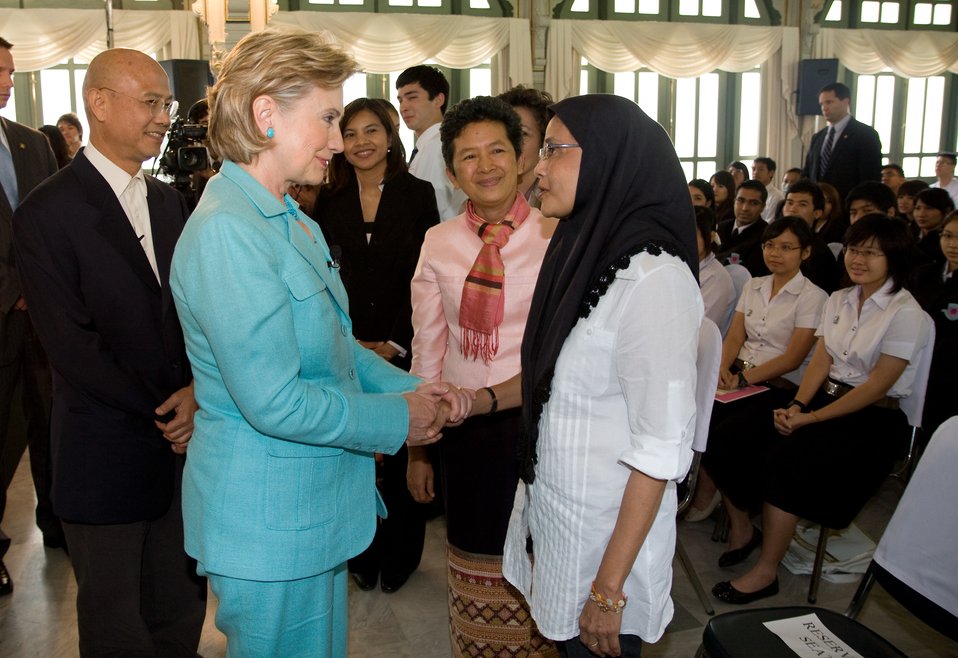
Secretary Clinton at Phyathai Palace

U.S. Secretary of State Hillary Rodham Clinton is greeted by Angkhana Neelaphaijit, President Working Group on Justice for Peace after an interview at Phyathai Palace in Bangkok, Thailand July 22, 2009.